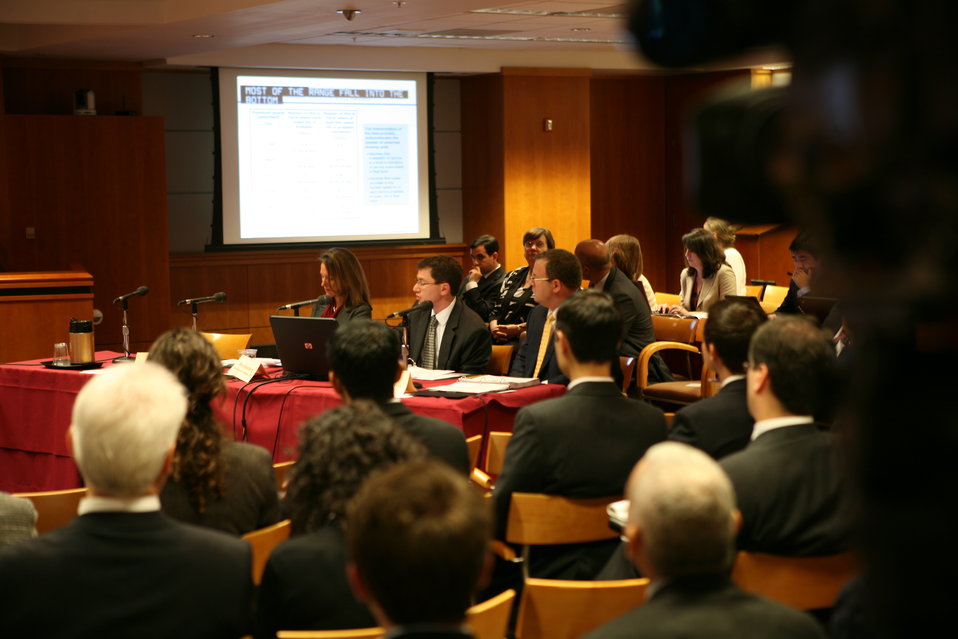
Broadband Midterm Review 9-29-09